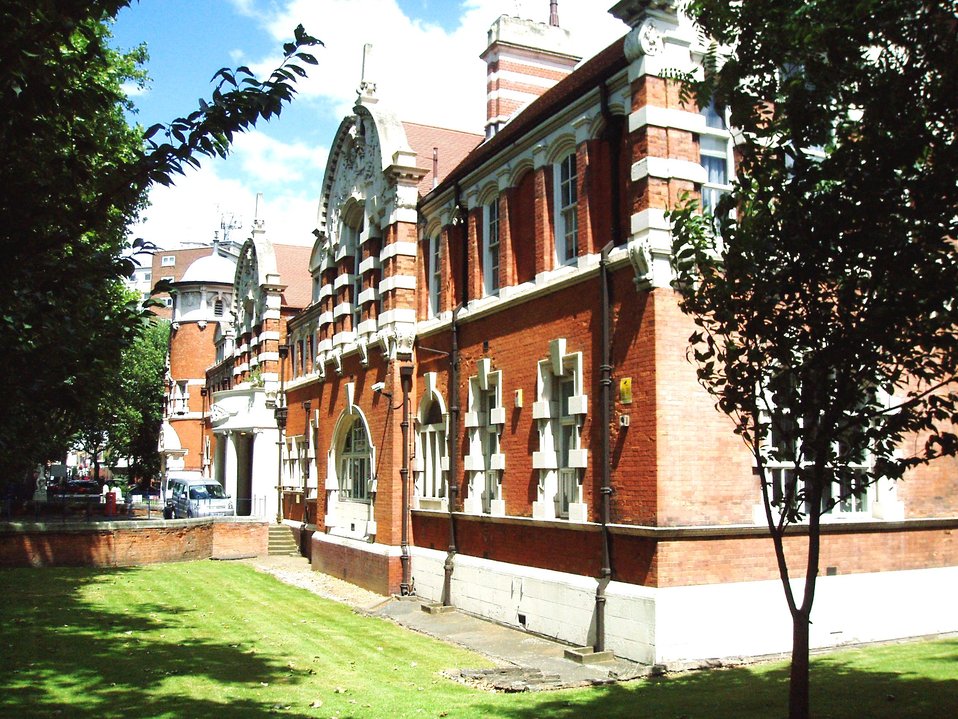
Български: Колежът (кампусът), част от УИЛ, в Стратфорд. UEL's Stratford Campus.